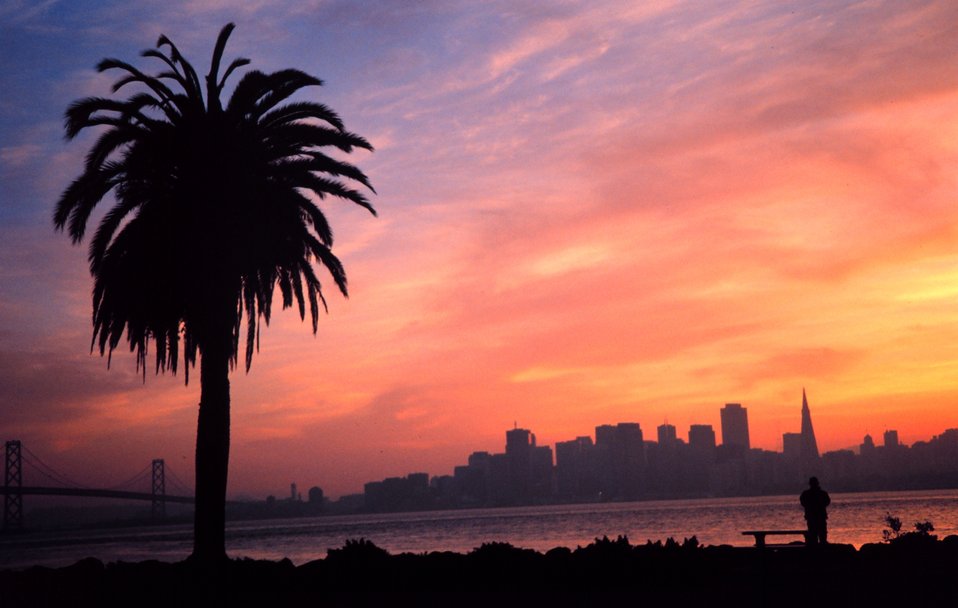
San Francisco skyline as seen from Treasure Island. The palm tree is one of the few palm trees in the San Francisco area. The Oakland Bay Bridge is to the left.